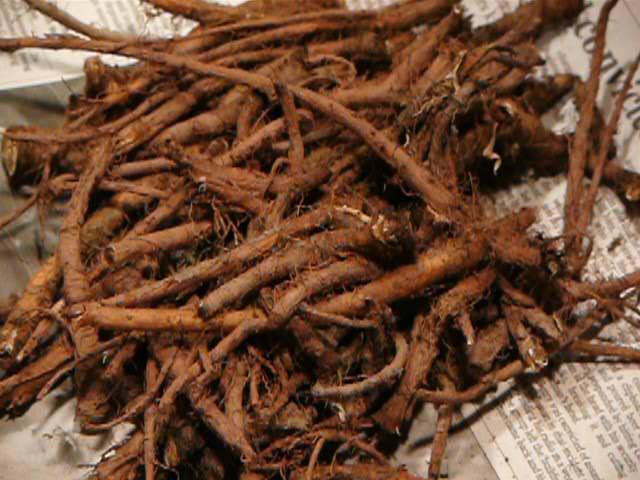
Dandelion roots